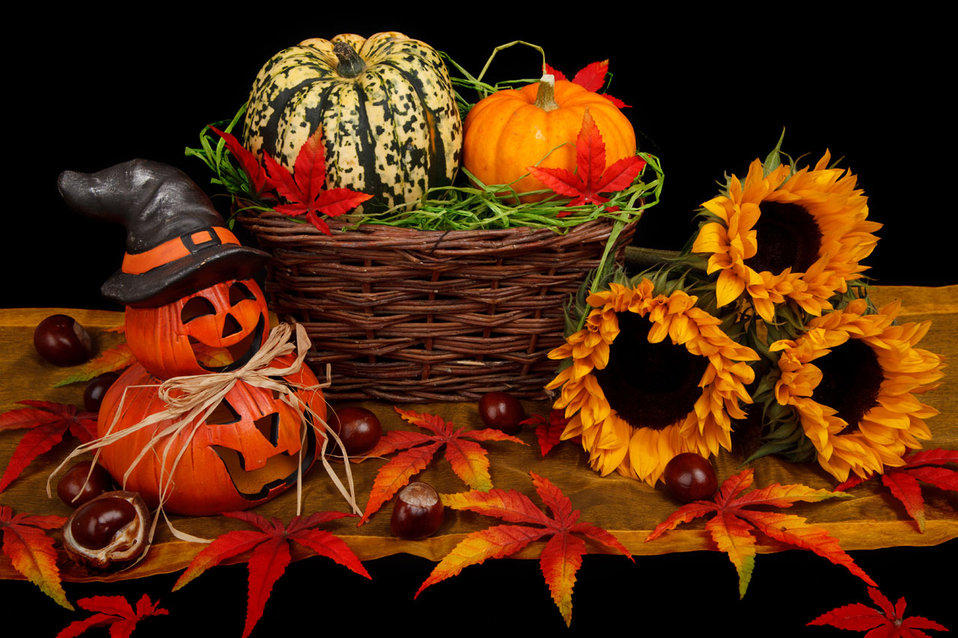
Halloween decoration in fall

Halloween still life autumn decoration with pumpkins on black background.